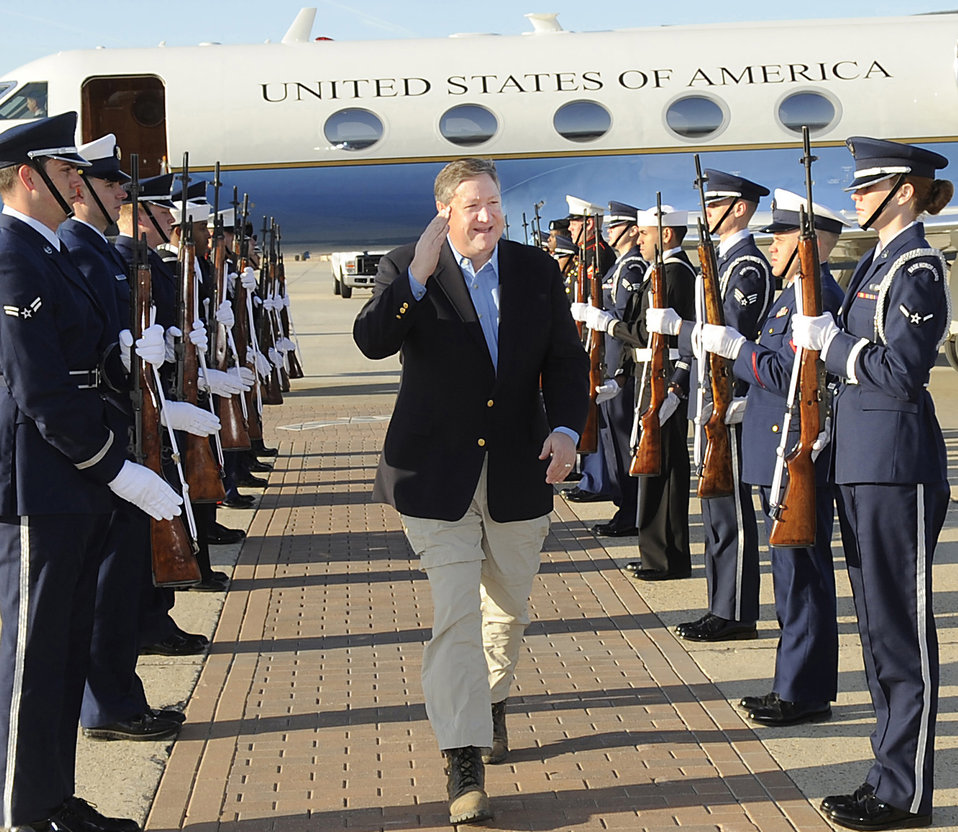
Welcome to McGuire AFB

Secretary of the Air Force Michael B. Donley arrives March 31 at McGuire Air Force Base, N.J., as the joint McGuire Honor Guard welcomes him. Secretary Donley toured the U.S. Air Force Expeditionary Center at Fort Dix and held a call for all Airmen during his visit.